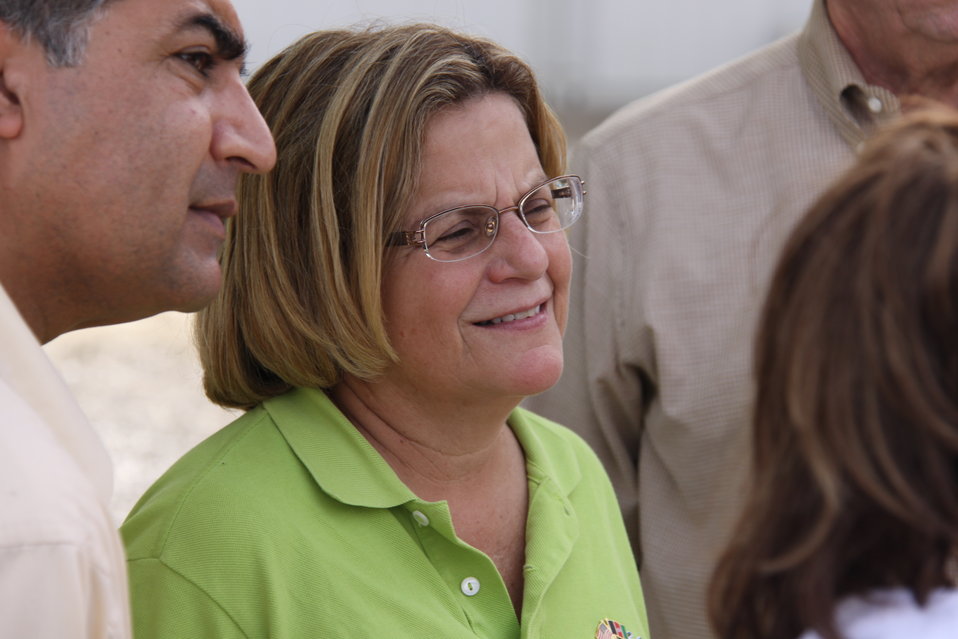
Meeting with Local Leaders in Kandahar